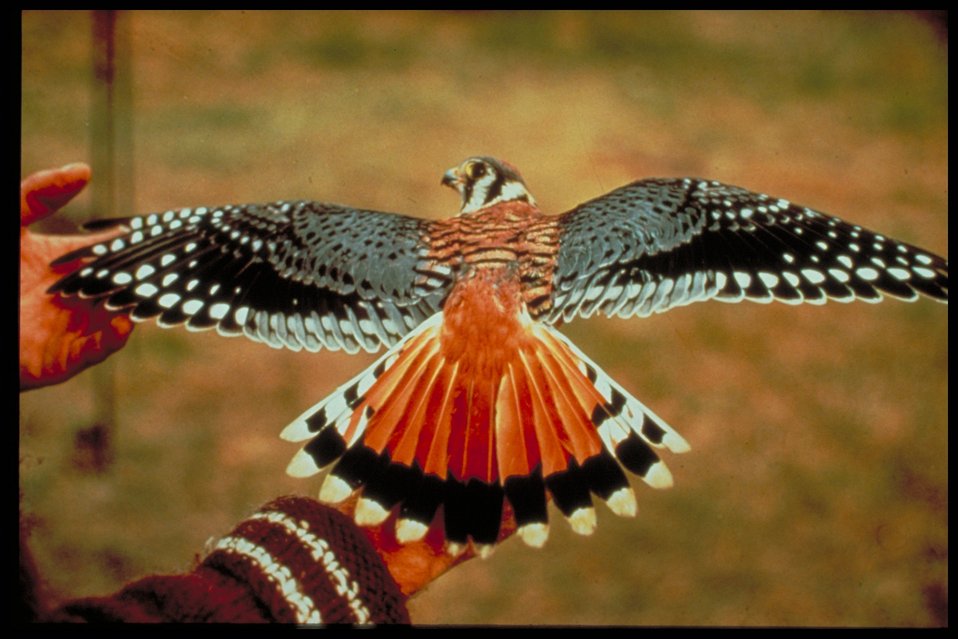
American Kestrel Birds of Prey National Conservation Area BOP Owyhee Field Office LSRD Lower Snake River District